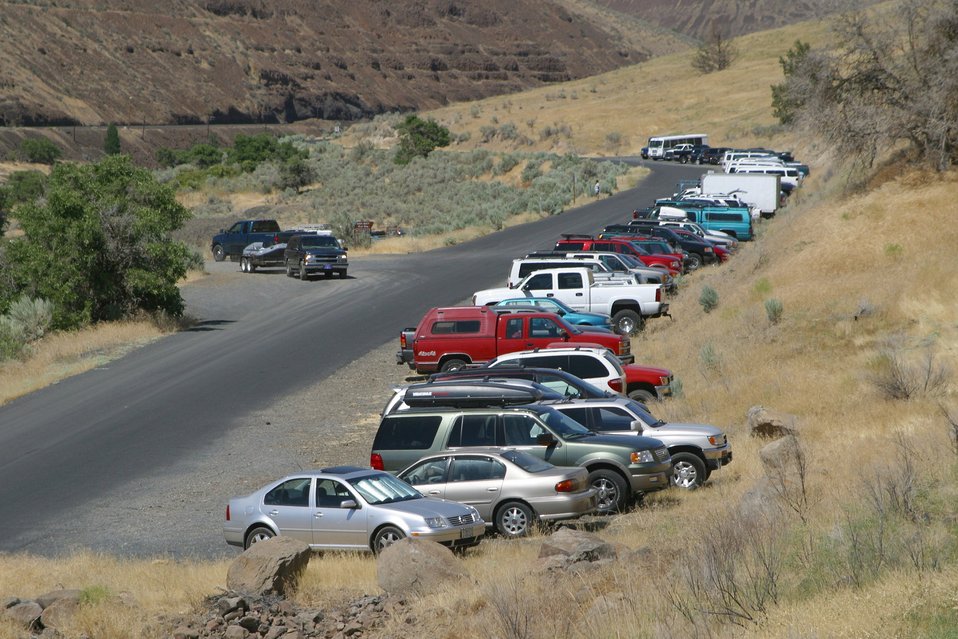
Parking above Sandy Beach take-out.